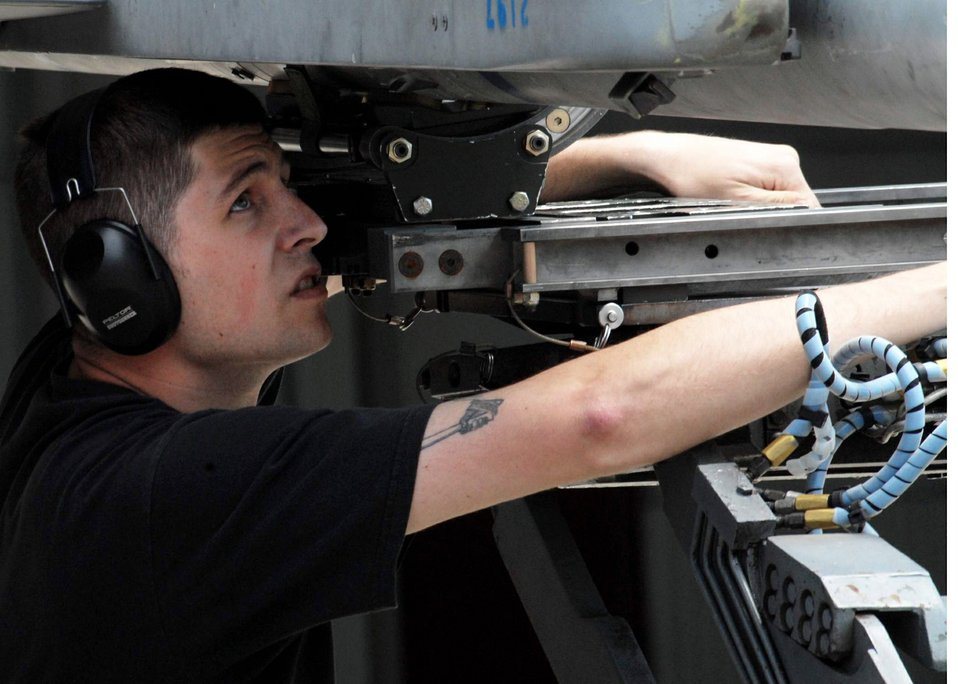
Kunsan hosts peninsula-wide weapons load competition

Staff Sgt. Lawrence Pyne secures a bomb May 10 at Kunsan Air Base, South Korea. Sergeant Pyne is a 35th Aircraft Maintenance Unit weapons load crew member.